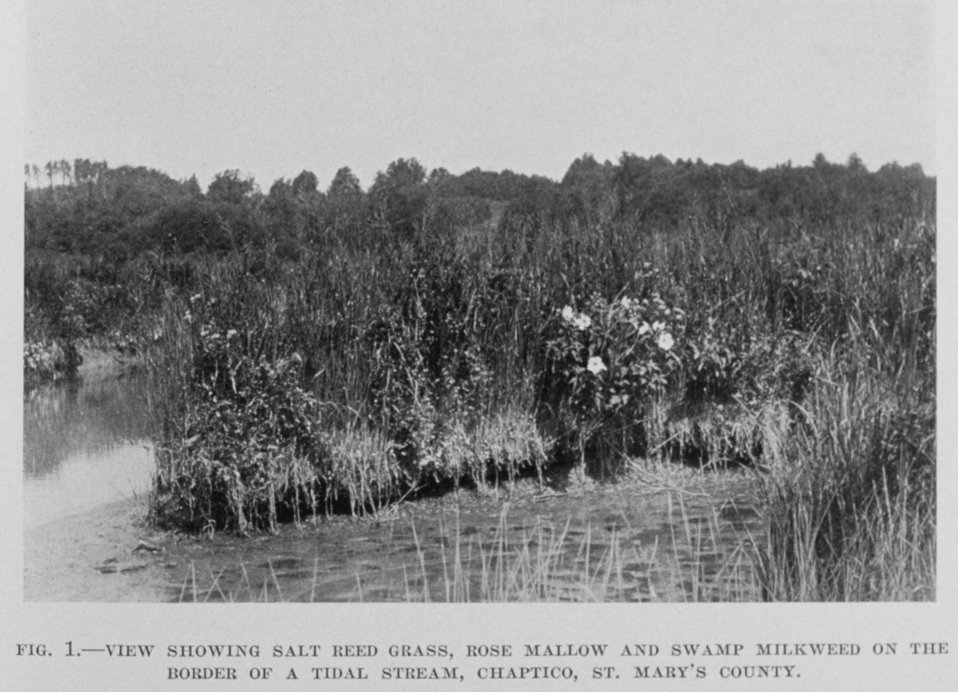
Salt reed grass, rose mallow, and swamp milkweed on the border of a tidal stream, Chaptico, St. Mary's County.